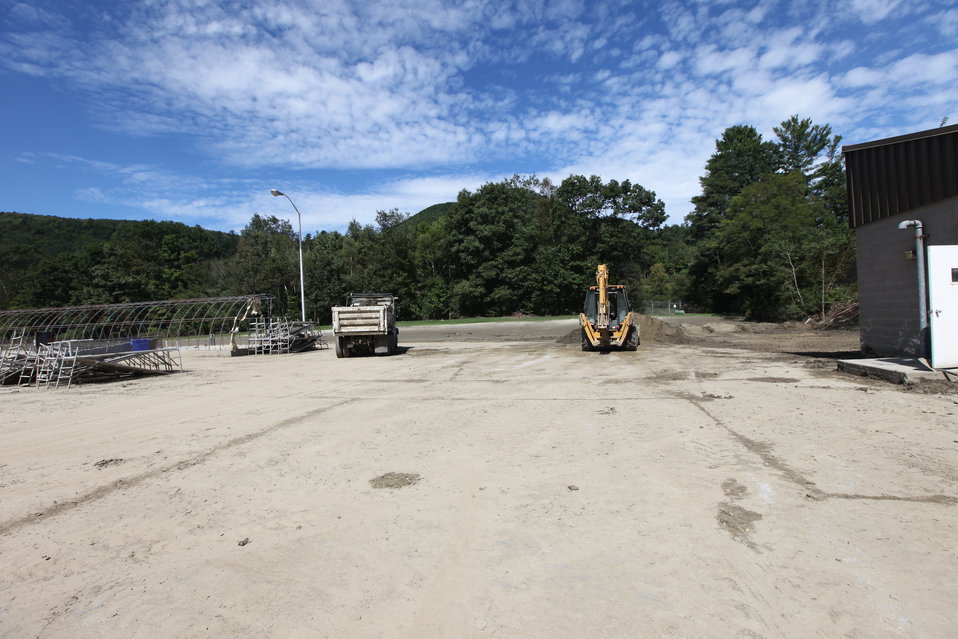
Storm damage relief at White River NFH

Heavy equipment operators came from other USFWS stations to help clean up.